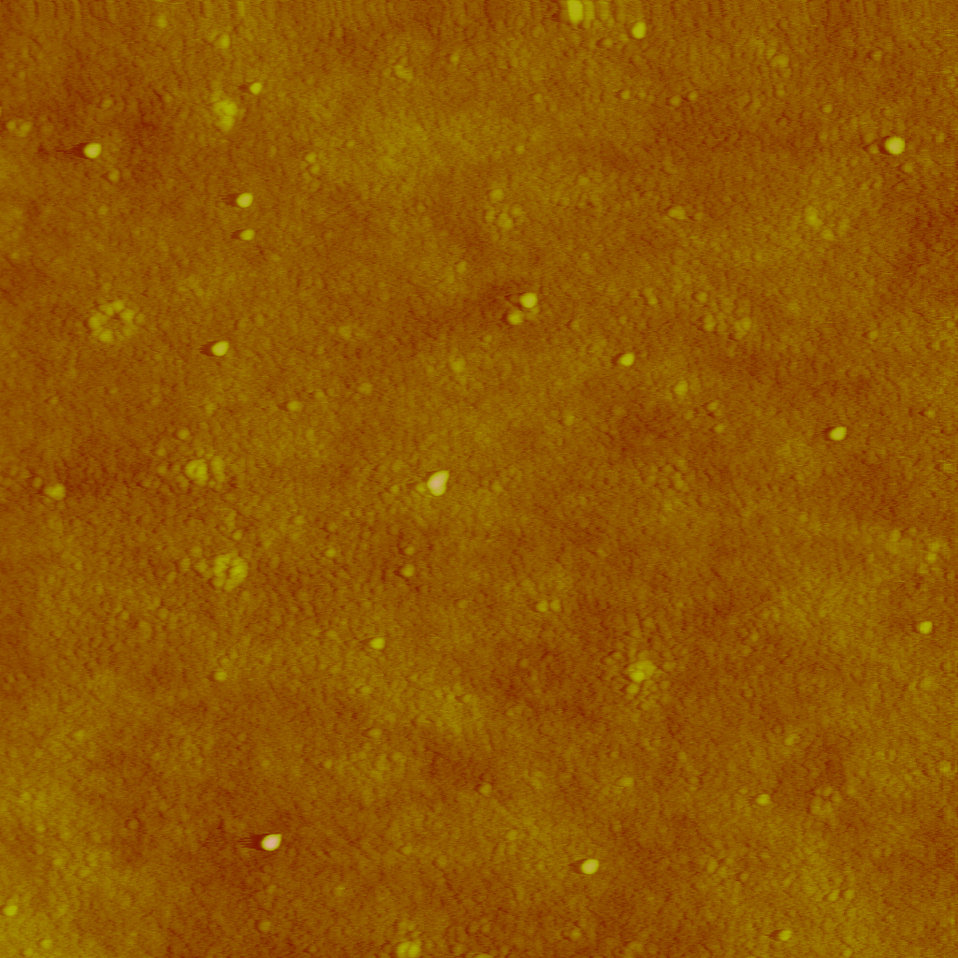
AFM; Silver Nanoparticles

AFM (Atomic force microscopy) image of silver nanoparticles formed from silver ions in solution with humic acid. Color tone in this image indicates height (0 to 10 nanometers) above the base plane, so brighter spots are taller, larger nanoparticles. Image is roughly 1,700 nm on a side.